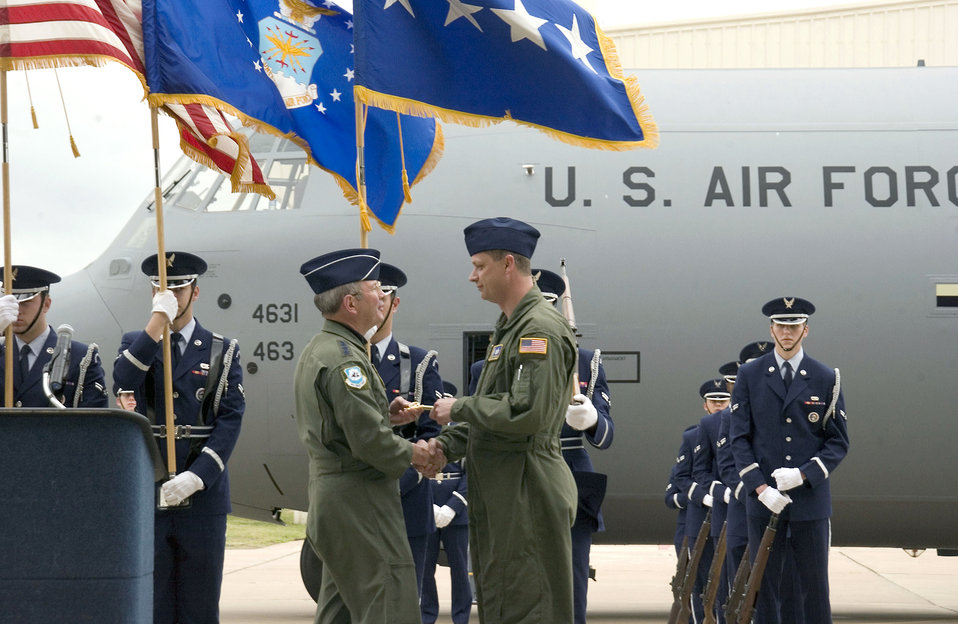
AMC, 463rd Airlift Group welcome first C-130J

General Duncan McNabb, Air Mobility Command commander, presents the